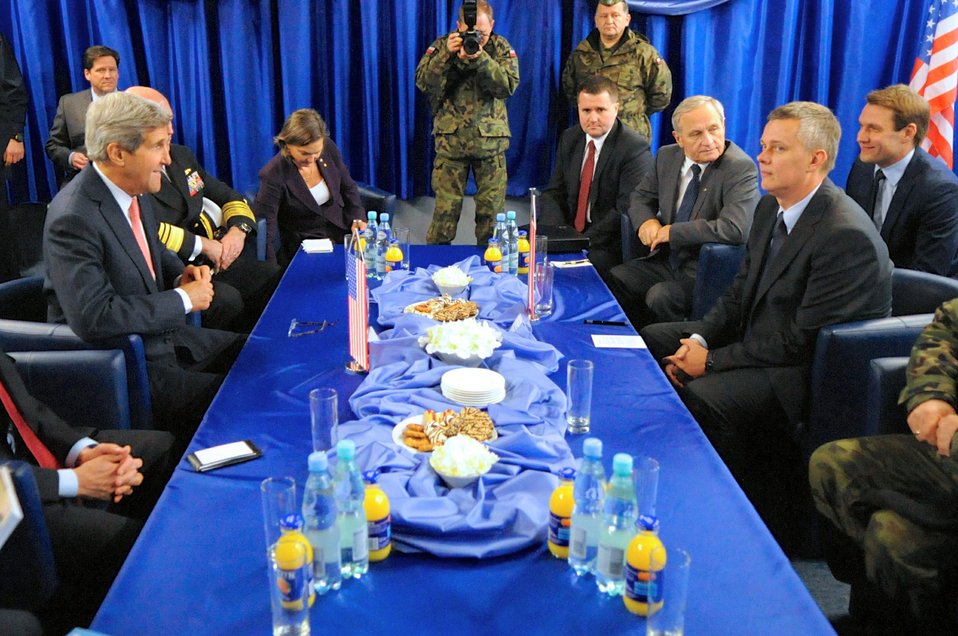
Secretary Kerry Holds a Bilateral Meeting With Polish Defense Minister Siemoniak

U.S. Secretary of State John Kerry and Polish Defense Minister Tomasz Siemoniak pose for photographers before a meeting at the Lask Military Airbase in Poland on November 5, 2013.